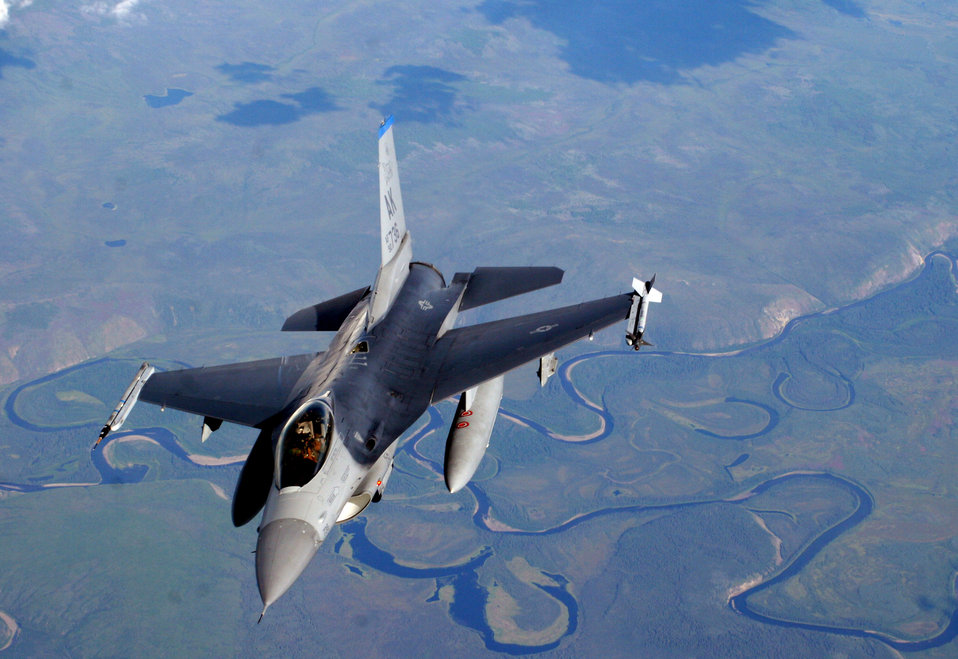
Eagles, Falcons wave a Red Flag

An F-16 Fighting Falcon from the 18th Fighter Squadron at Eielson Air Force Base, Alaska, flies away after refueling from a KC-135 Stratotanker during Red Flag-Alaska July 20. More than 80 aircraft and 1,500 servicemembers from six countries are participating in the exercise July 12 to 27 to sharpen their combat skill in simulated combat sorties. Red Flag-Alaska's multinational participation and the addition of the Pacific Alaskan Range Complex assets provide realistic combat training in a safe and controlled setting.